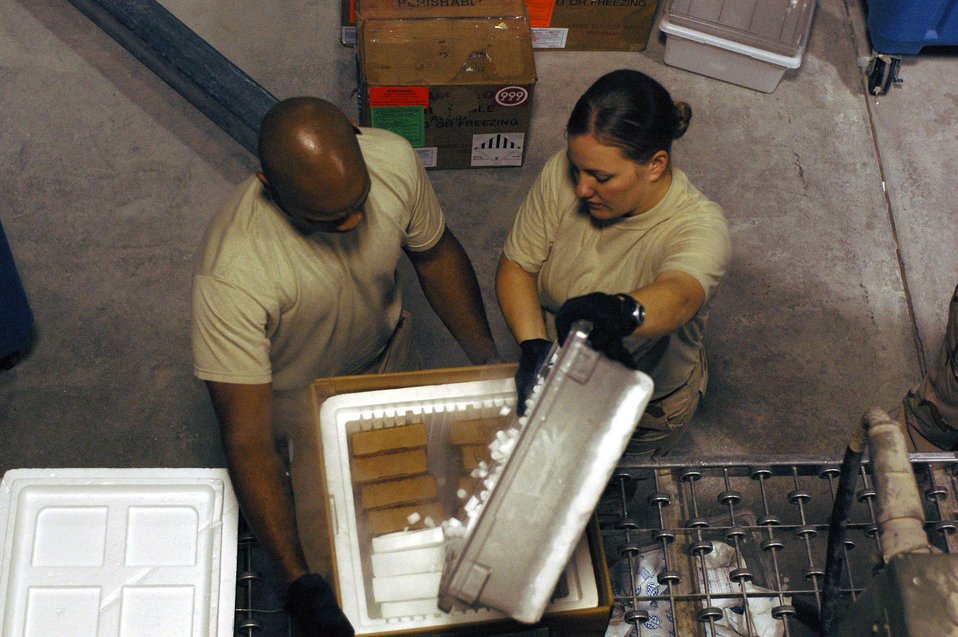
Shipping blood from the 'heart'

Tech. Sgt. Joseph Pinkney (left) holds a box of fresh frozen plasma steady as Senior Airman Beth Gunn pours more dry ice into the box Nov. 20. Fresh frozen plasma must be kept frozen to prevent spoiling of the blood product. Sergeant Pinkney and Airman Gunn are with the 379th Expeditionary Medical Group's blood transshipment center and are deployed from Langley Air Force Base, Va.